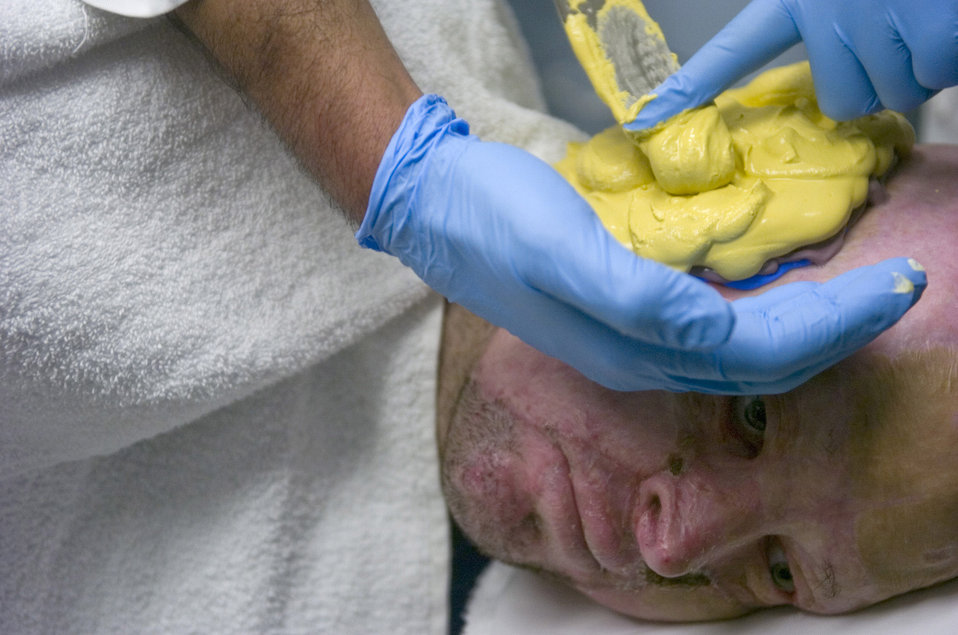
Wounded warrior receives new ears

Marine Capt. Ryan Voltin remains still as Capt. (Dr.) Angela Stanton (right) and Col. (Dr.) Joe Villalobos (left) create a 3-D model resin prosthesis mold at the McGowan Dental Clinic Sept. 29 at Lackland Air Force Base, Texas. Captain Voltin, an AH-1 Cobra pilot, lost his ears when his helicopter erupted in flames during a training accident in May 2007. Dr. Stanton and Dr. Villalobos are fellow maxillofacial prosthodontists assigned to the 59th Medical Wing.